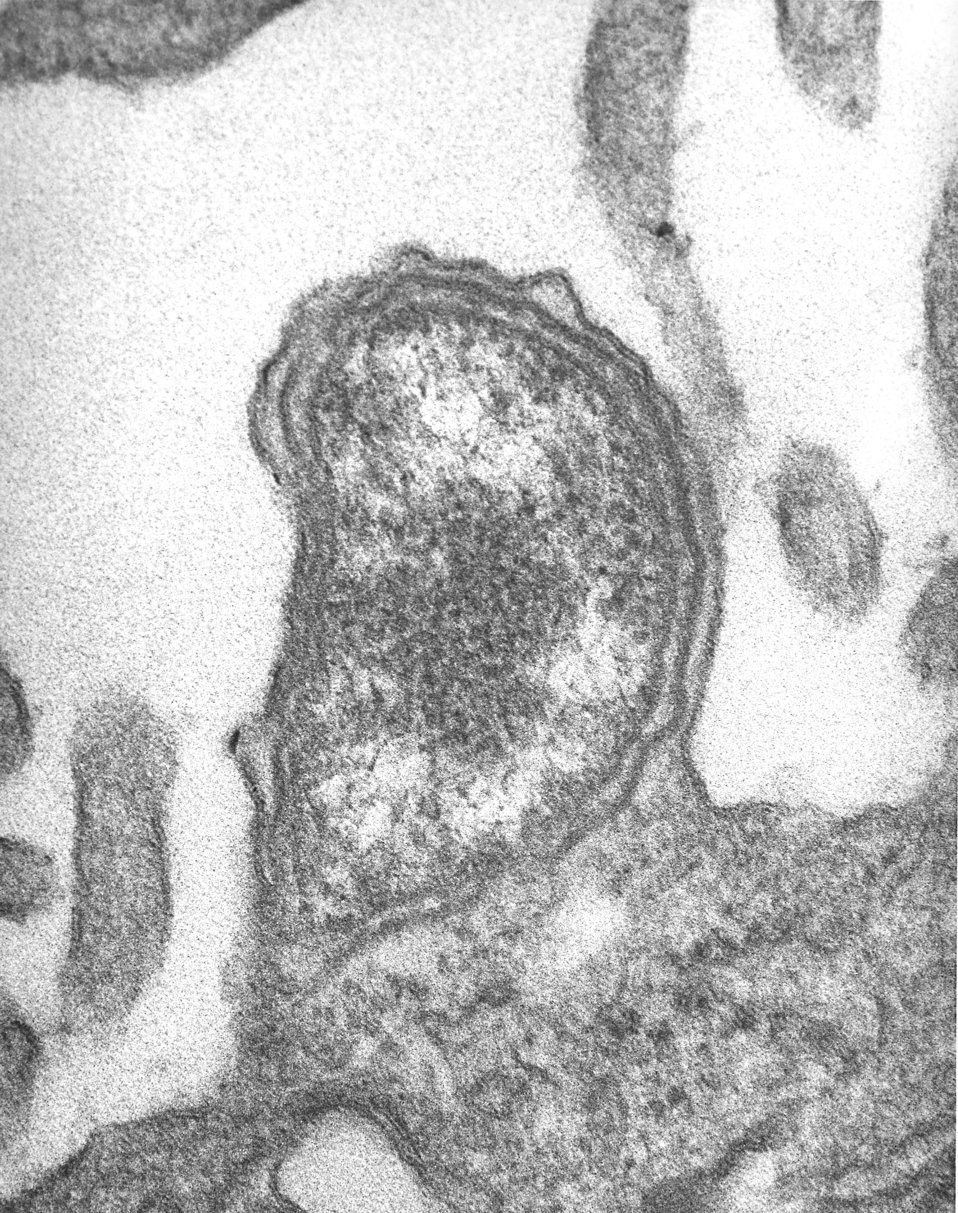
This 1976 transmission electron micrograph (TEM) depicted a peritoneal mesothelial cell from a mouse that had been experimentally infected intraperitoneally with Orientia tsutsugamushi rickettsial micro-organisms. In this particular field of view, an organism was photographically captured as it was budding from the luminal cell surface, while still covered by a third layer consisting of the host cell's plasma membrane.